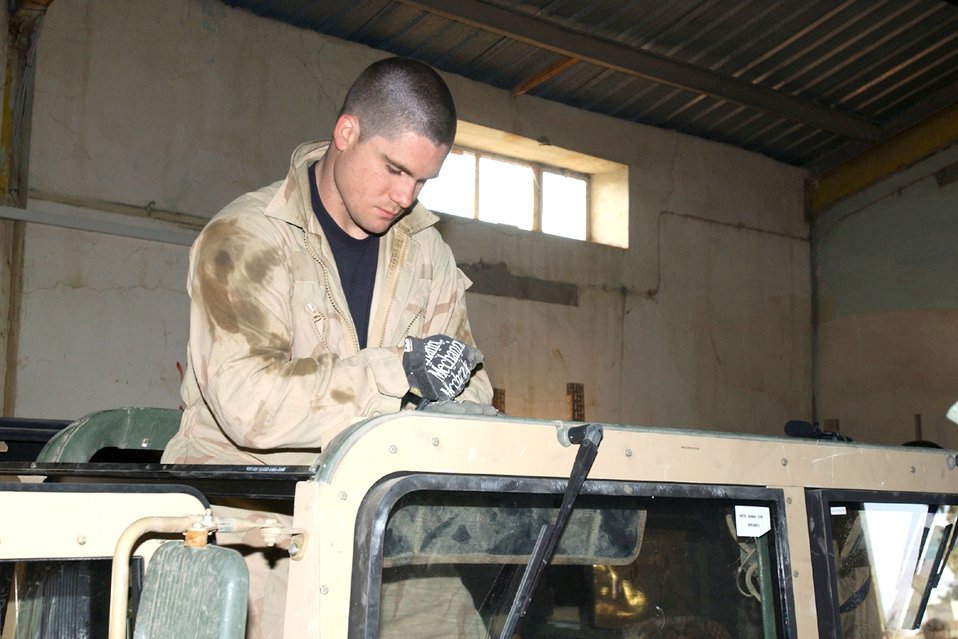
Armoring up

KIRKUK AIR BASE, Iraq -- Senior Airman Danny Hawkins prepares the roof of a Humvee here. Airman Hawkins is part of a U.S. Central Command Air Forces